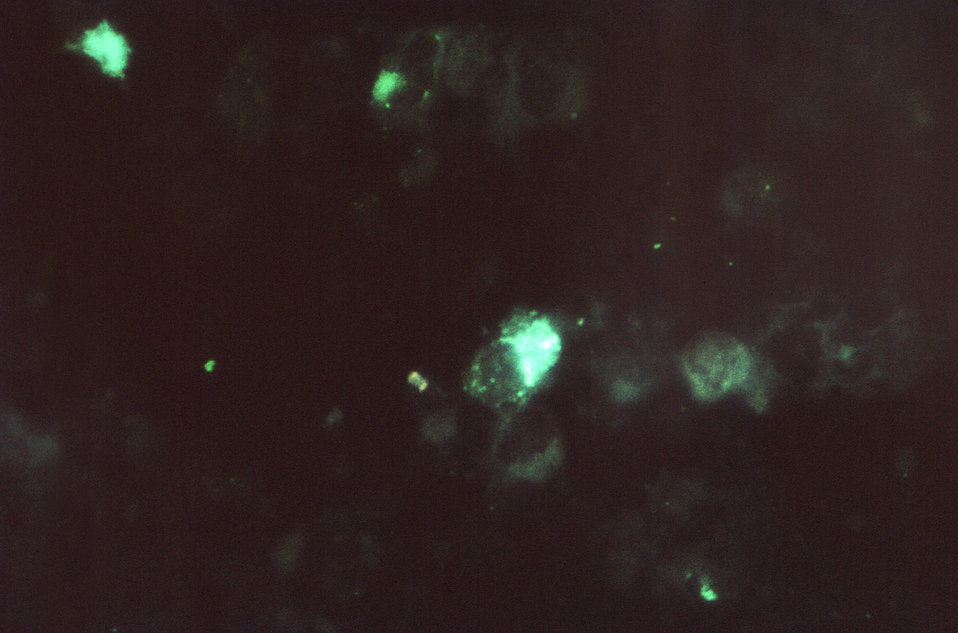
Under a magnification of 400X, and prepared using direct fluorescent antibody (FA) staining technique, this photomicrograph revealed positive staining for the presence of Chlamydophila psittaci, formerly Chlamydia psittaci, in a case of psittacosis.